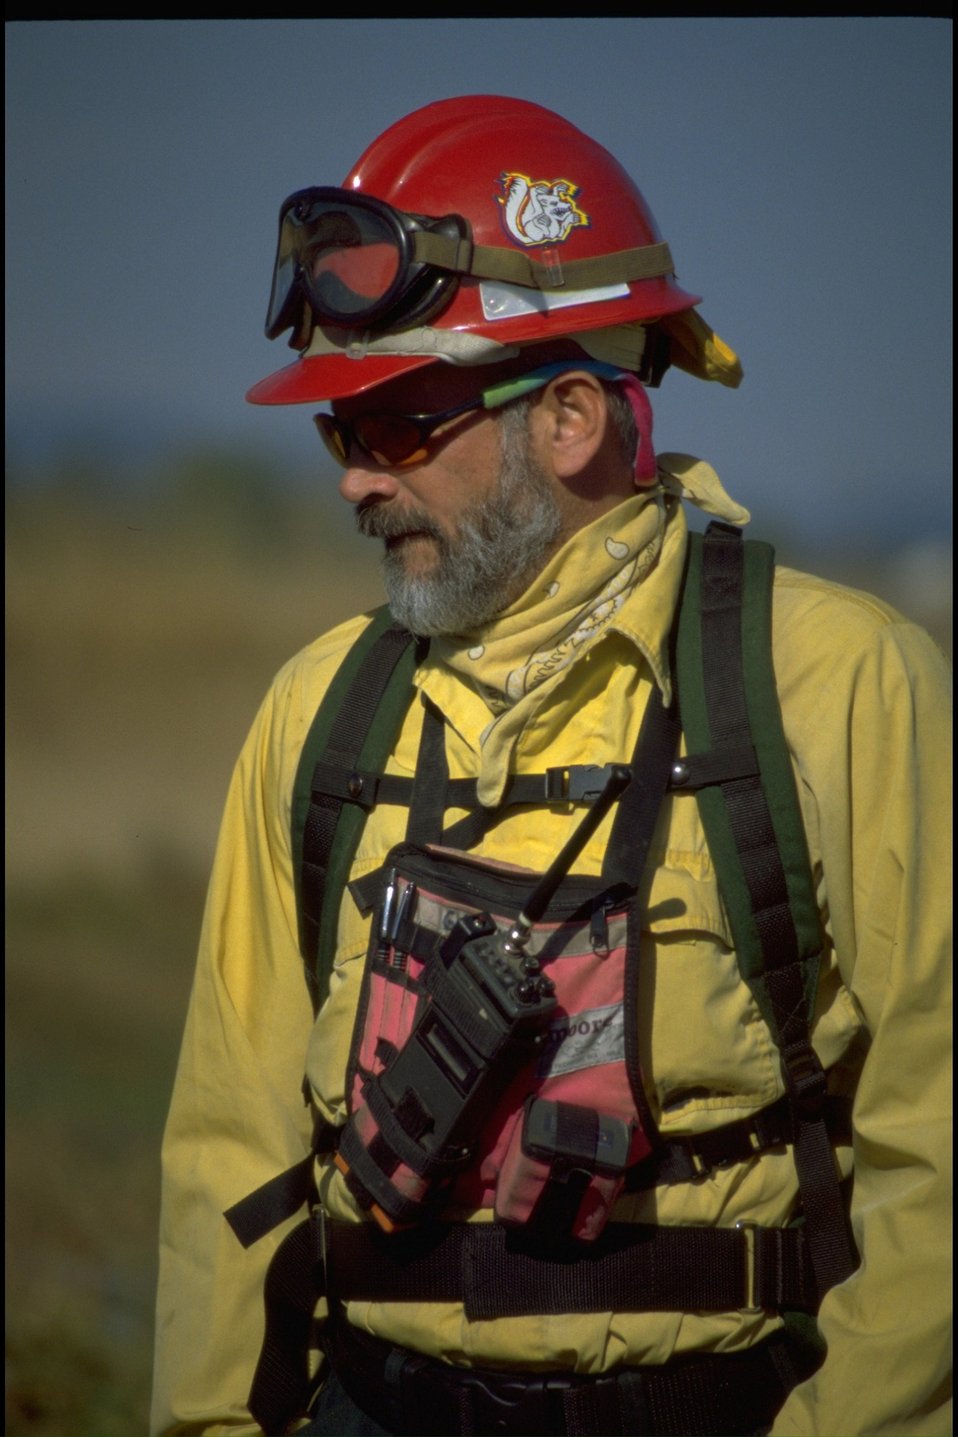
Turtle-Swale Wetland Burn (Gregg Scheid).